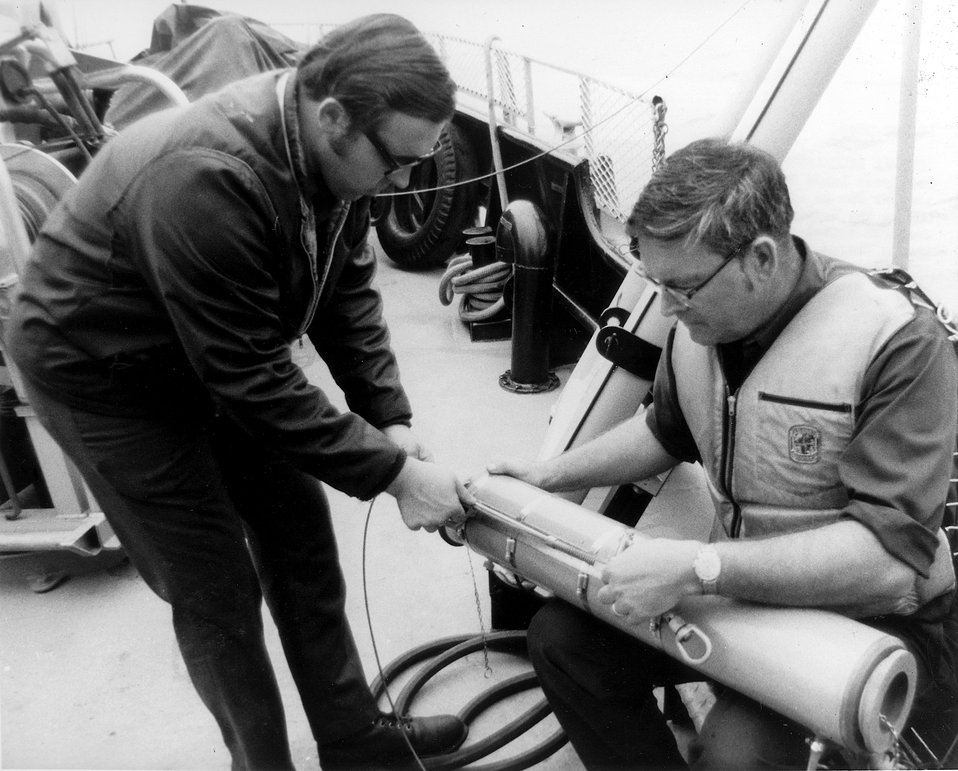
Researchers from the Center for Great Lakes Studies prepares a Van Dorn water sampler for an experimental run.
c.1972